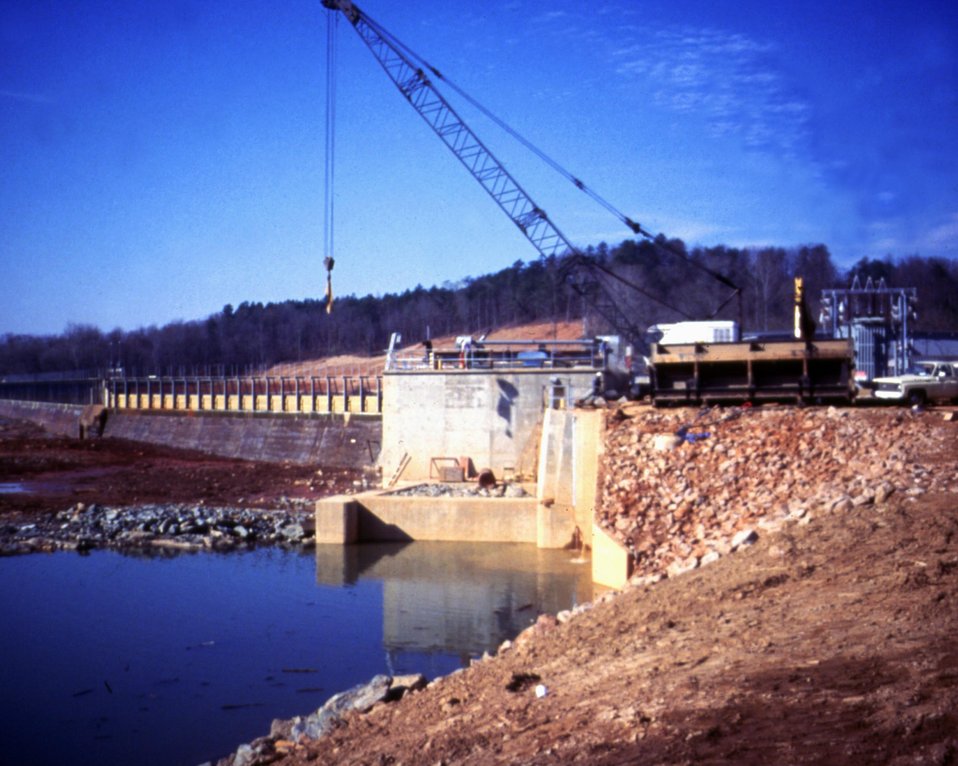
GENERAL VIEW OF COMPLETED PROJECT.

THE DOE SMALL-SCALE HYDROPOWER PROGRAM CONSISTS OF 19 PROJECTS AND DEMONSTRATES THE VIABILITY OF SMALL-SCALE HYDRO-POWER WITH AVAILABLE TECHNOLOGY. THE BROAD RIVER PROJECT, BEGUN IN JANUARY, 1983, WENT ON LINE DECEMBER 27, 1987. UTILIZING ONE OPEN-PIT TUBULAR TURBINE THAT PRODUCES A MAXIMUM OF 4,140 KILOWATTS, THE DAM PROVIDES A GROSS HEAD OF 20.2 FEET WITH AN ANNUAL STREAM FLOW OF 2,472 CFS.